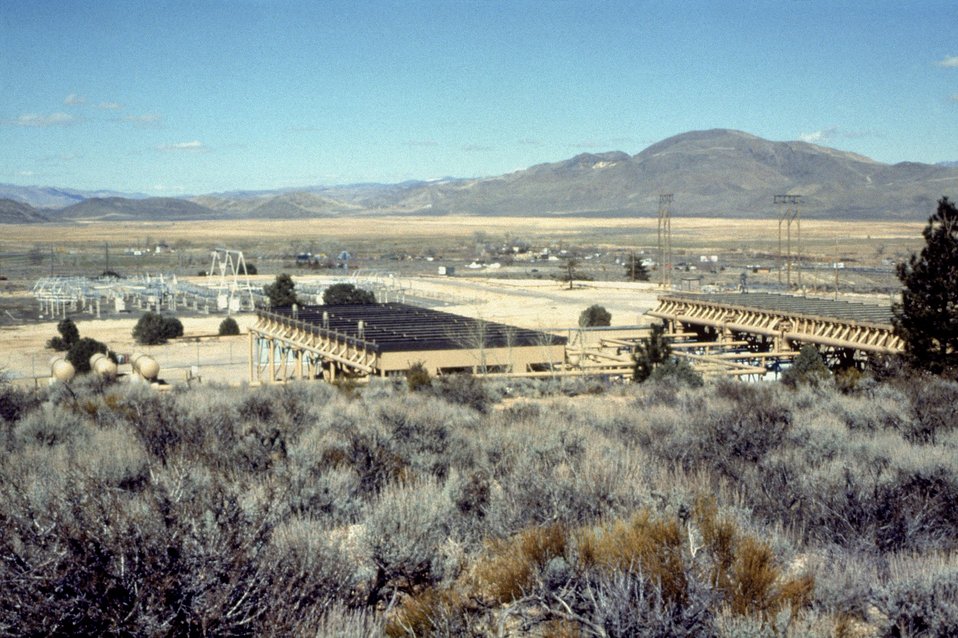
GEOTHERMAL PLANT LOCATED AT STEAMBOAT SPRINGS, NEVADA.

THE STEAMBOAT GEOTHERMAL POWER PLANTS IN STEAMBOAT SPRINGS, NEVADA ARE OWNED BY STEAMBOAT DEVELOPMENT CORPORATION.